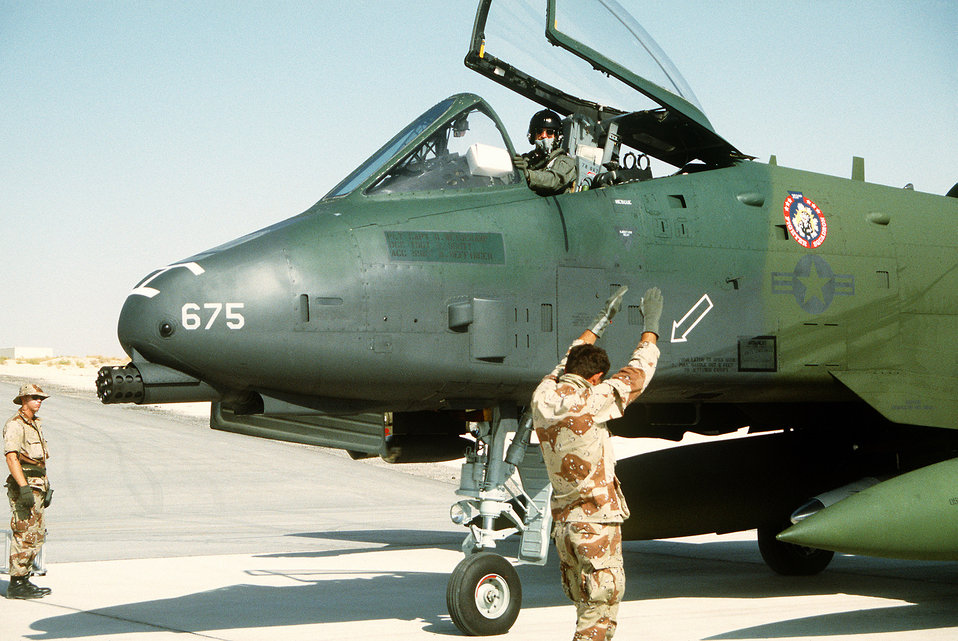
A-10 Thunderbolt II

1990's -- A ground crewman signals as the pilot of a 353rd Tactical Fighter Squadron A-10 Thunderbolt II aircraft brings his plane to a stop upon arrival in support of Operation Desert Shield.